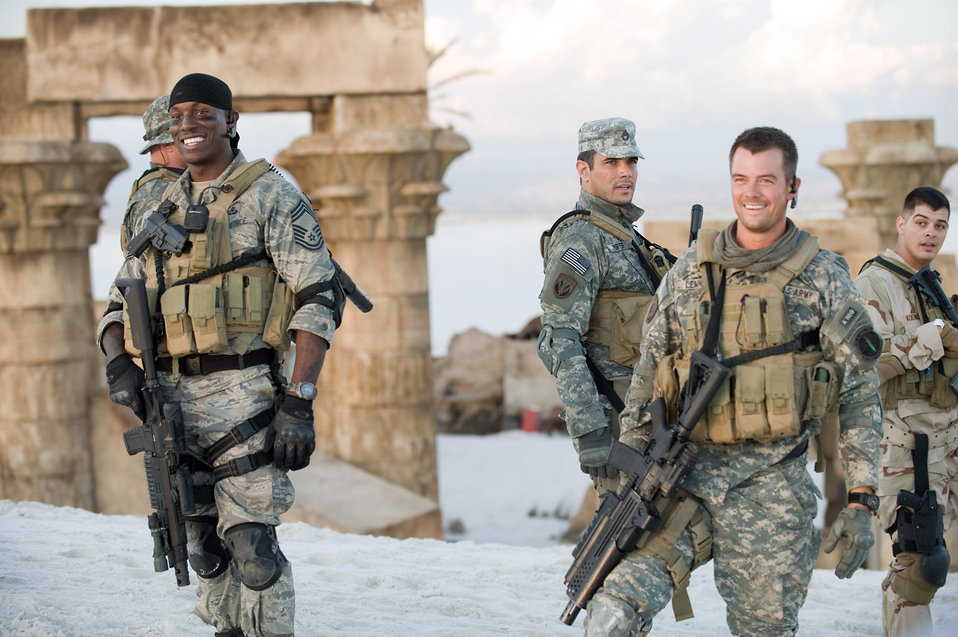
Tinker Airmen make mark in 'Transformers: Revenge of the Fallen'

Actors Josh Duhamel and Tyrese Gibson take a break while on the set